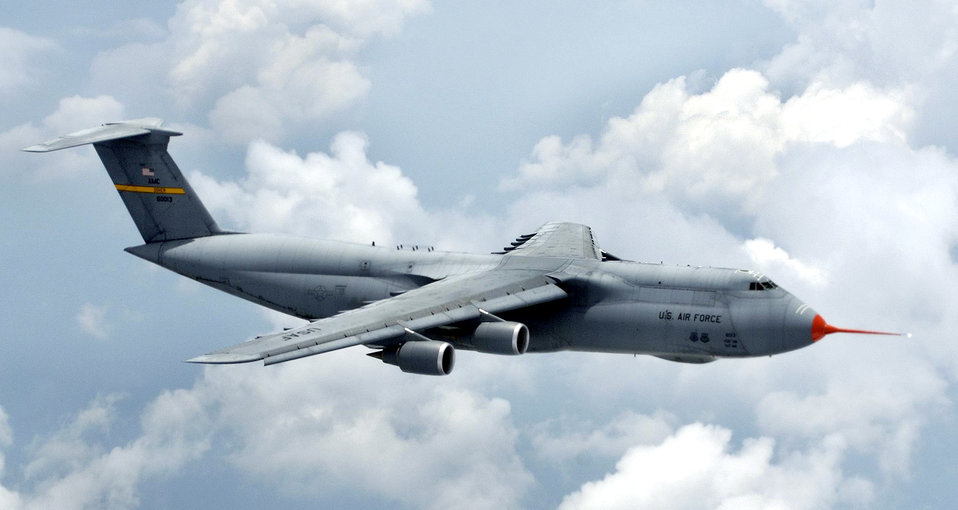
C-5 still going strong after 38 years

A modernized version of the C-5 Galaxy, known as the C-5M, made its maiden flight at Dobbins Air Reserve Base, Ga., on Monday, June 19. Upgrades to the venerable airlifter include new, more powerful engines; a modern cockpit with a digital, all weather flight control system, a new communications suite and enhanced navigation and safety equipment.